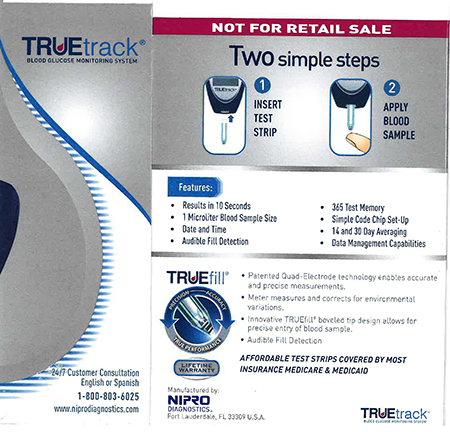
RECALLED – Blood Glucose Meters

January 2, 2014 – Product Recall – Nipro Diagnostics, Inc. Initiates Voluntary Recall of Certain TRUEbalance and TRUEtrack Blood Glucose Meters.